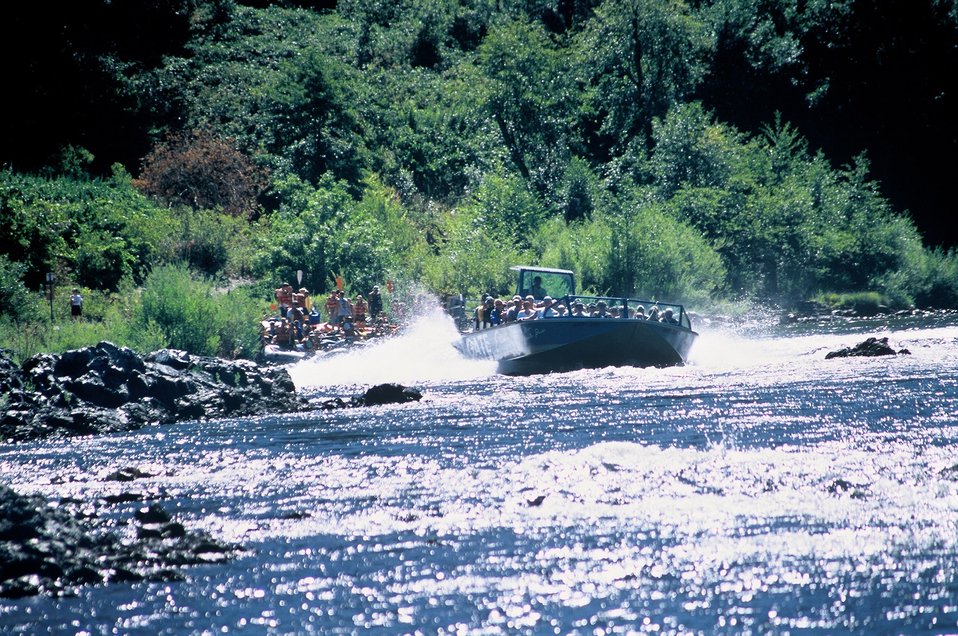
Hog Creek